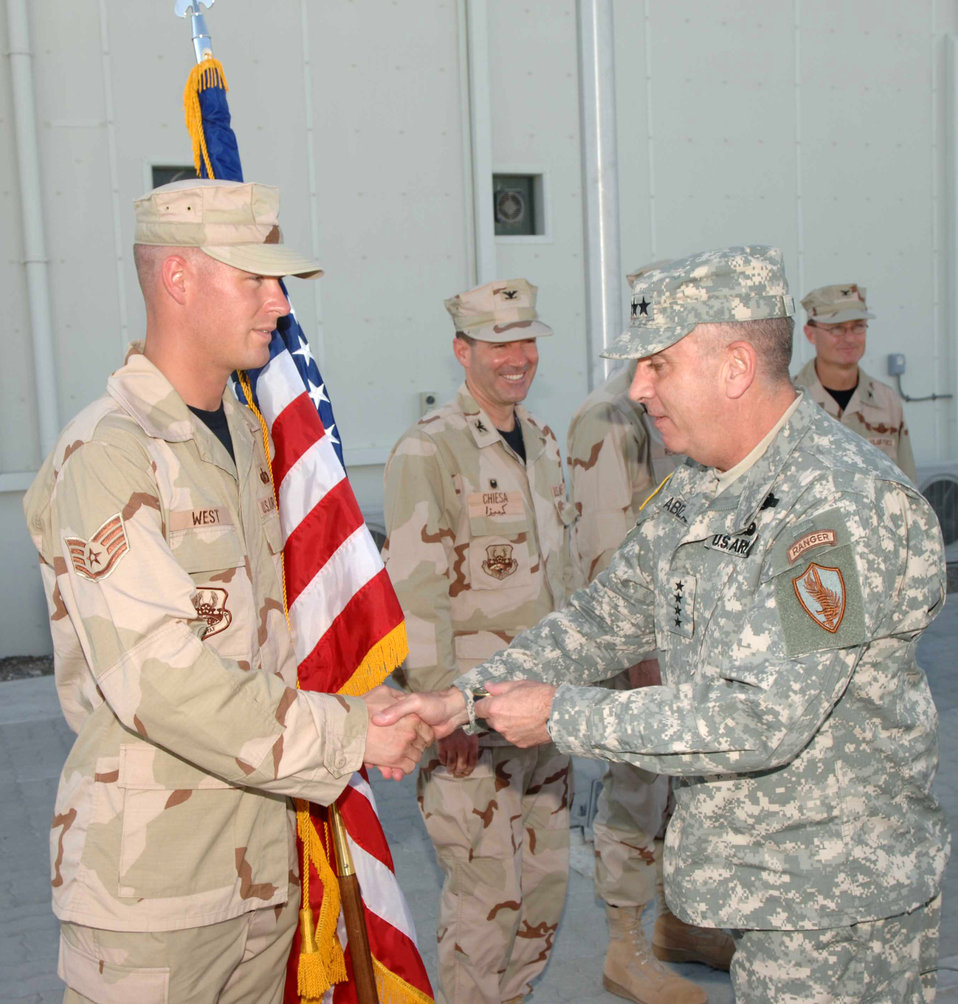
Coined by the general

Staff Sgt. Ronald West shakes hands and accepts a coin from Army Gen. John Abizaid, commander of U.S. Central Command, Oct. 10 in Southwest Asia. General Abizaid visited this forward operating location to meet with Airmen and host-nation officials. Sergeant West is deployed to the 380th Air Expeditionary Wing.